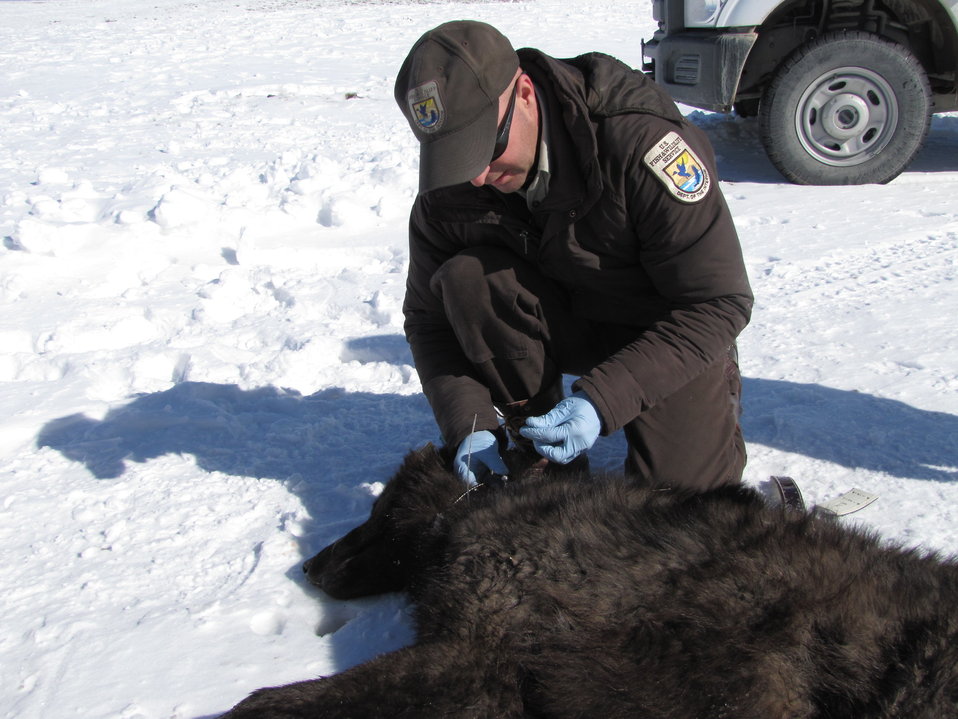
A Black Wolf Pup

National Elk Refuge Biologist Eric Cole affixes a collar on a male black wolf pup. The Pinnacle Peak pack has not previously had any black wolves in the group.